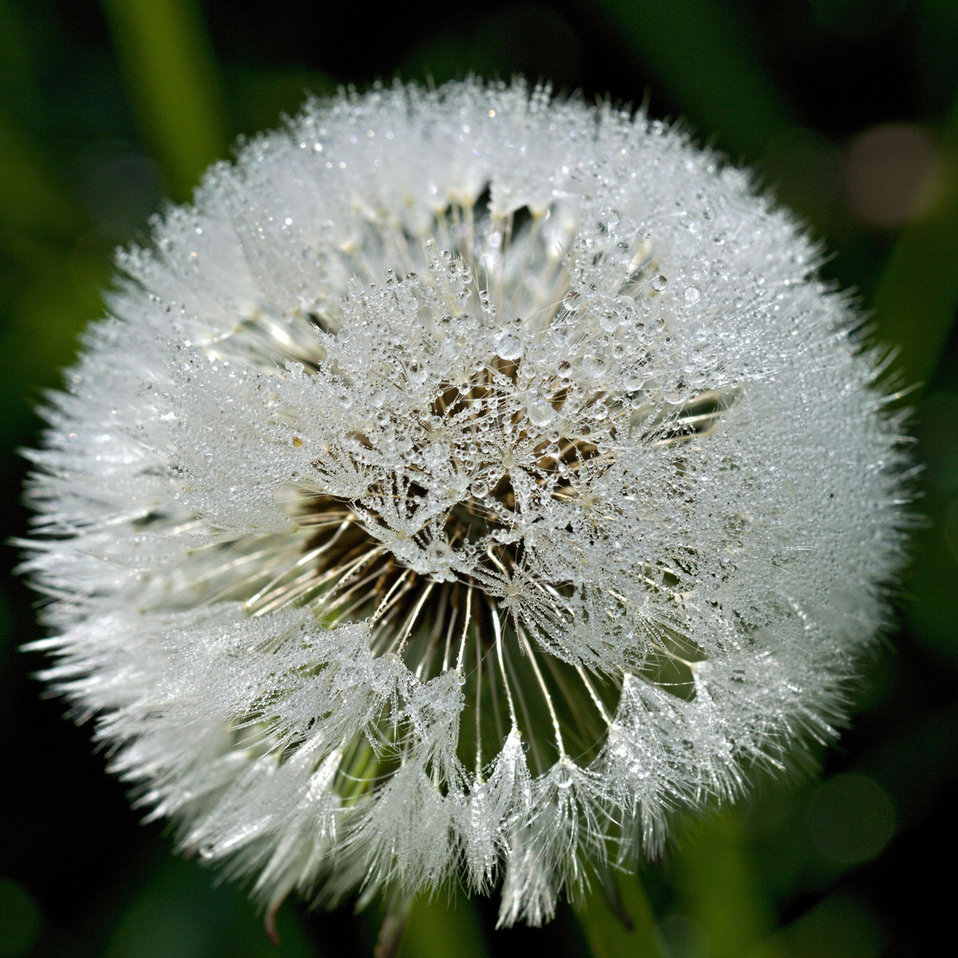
Dandelion light with morning dew.